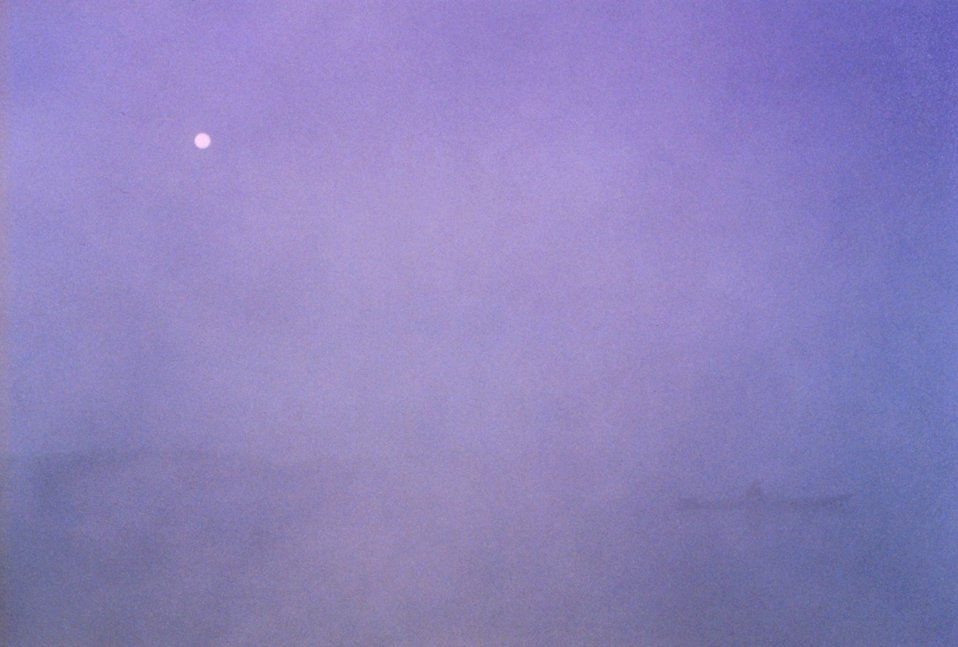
Kayaking on a foggy full moon night.